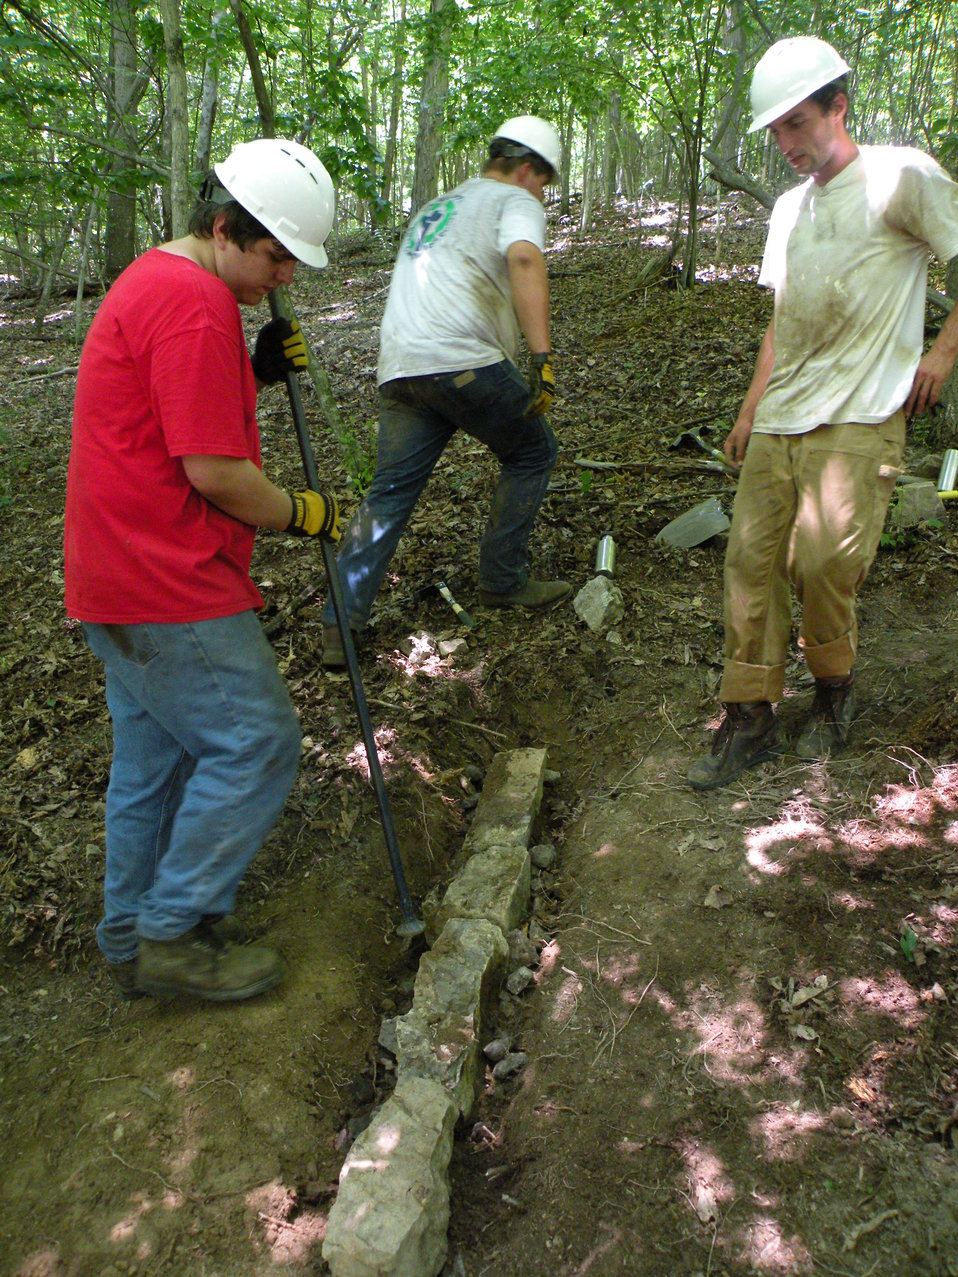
Building a water bar

YCC crew members build a water bar at White Sulfur Springs National Fish Hatchery.